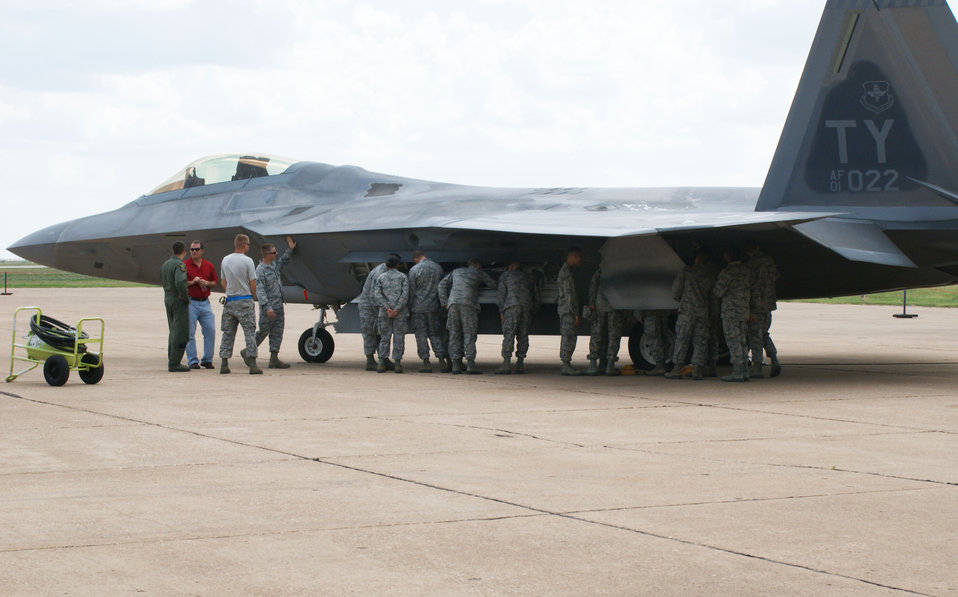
Hurricane Isaac Prep

Students from the 362nd Training Squadron get familiairization training on the F-22 Raptor from 325th Aircraft Maintenance Squadron personnel Aug. 28, 2012 at Sheppard Air Force Base, Texas. The 82nd Training Wing and 80th Flying Training Wing assisted in bedding down 14 aircraft and 40 personnel after their evacuation from Tyndall Air Force Base, Fla., due to Hurricane Issac.